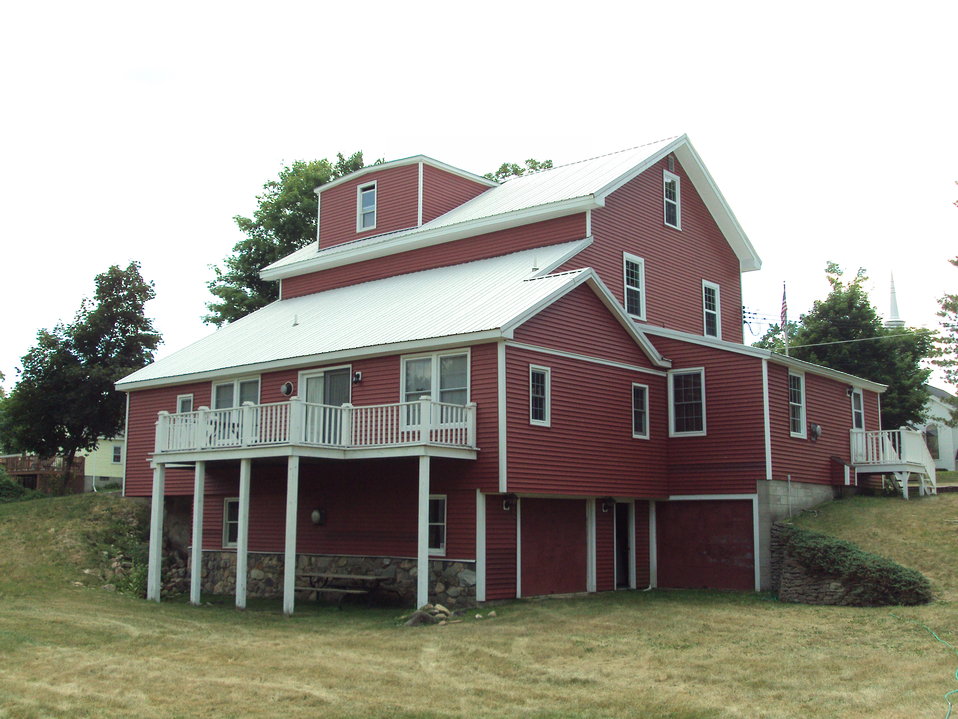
Hadley Flour and Feed Mill in Hadley Township, Michigan.